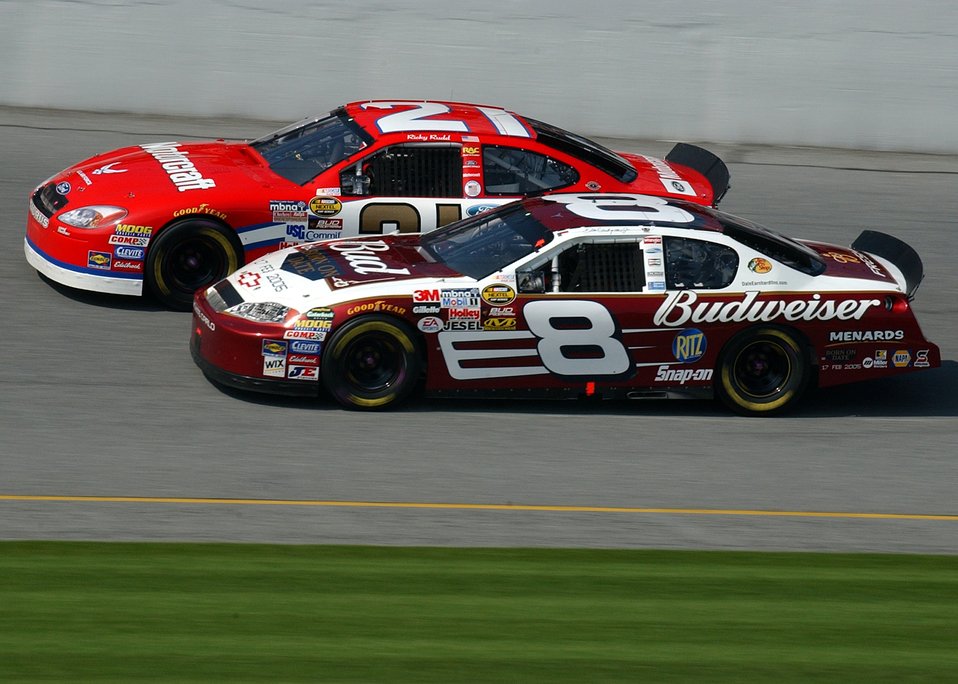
Air Force driver ready for Daytona 500

DAYTONA, Fla. -- The driver of the Air Force NASCAR car No. 21, Ricky Rudd, held off the challenge of No. 8 Dale Earnhardt Jr. during the running of the Gatorade 150 held here Feb. 17. Mr. Rudd, who finished in 5th place, will start in the 11th position for the Daytona 500, which will be held here Feb. 20.